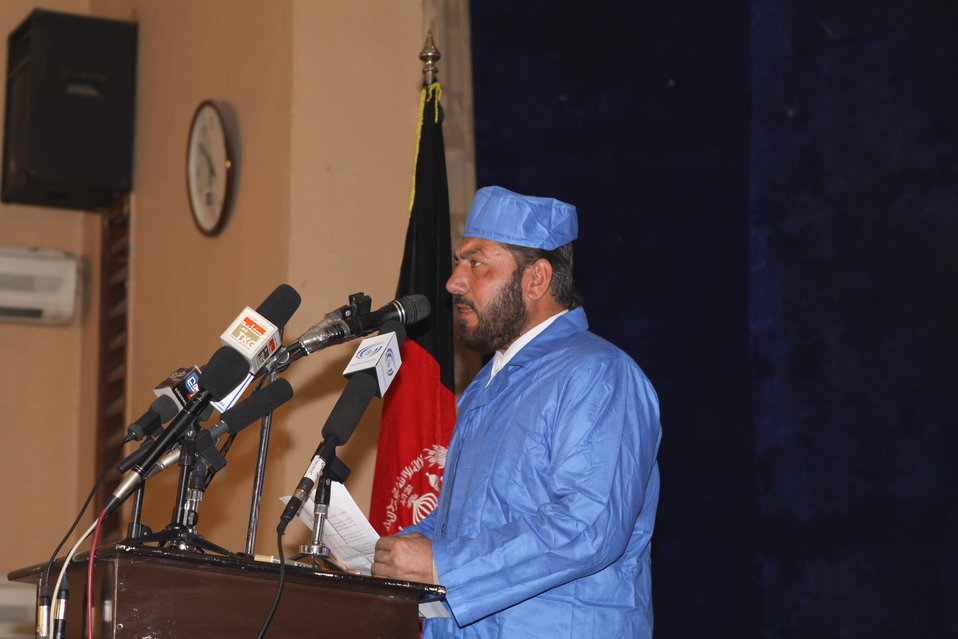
Community Health Workers Celebrated

Kabul, Afghanistan | December 5, 2010 — In support of the United Nations designated International Volunteer Day for Economic and Social Development, Afghanistan’s Ministry of Public Health celebrated its annual Community Health Worker Day today. Acting Minister of Public Health Dr. Suraya Dalil, USAID Senior Deputy Mission Director Robert Hellyer, other government officials, and international donors joined in recognizing the critical contribution of community health workers in Afghanistan and encouraging them to continue their voluntary support to their communities.
The event praised the contributions of the more than 22,000 volunteers throughout the country who deliver community level health-education, counseling, and services out of village health posts located in private homes. The Ministry of Public Health envisioned that community-based healthcare programs will actively encourage communities and families to adopt healthy lifestyles and behaviors, and provide families access to high quality and socially acceptable preventative medicine and life-saving services.
“We have 22,000 community health workers in Afghanistan that are able to implement the basic and standard medicines. They all have been trained through a job description,” said Minister Dalil. Addressing the health workers, she added, “I am proud and feel powerful that I have people like you.”
USAID-funded health projects collaborate closely with the Ministry of Public Health to improve the health and nutritional status of Afghans, provide quality primary healthcare, and promote healthy behaviors at the community and household-levels. USAID supported the training of more than 9,000 of the volunteer community health workers currently working in Afghanistan.
“On behalf of the American people, I congratulate the Community Health Workers for their diligence to gain the skills and knowledge necessary to serve their communities in this important role,” said USAID Senior Deputy Mission Director Hellyer. “USAID strongly supports community based health care and believes that quality community-based health services are essential to reaching Afghanistan’s Millennium Development Goals.”
To support the Basic Package of Health Services, USAID assisted in developing the community health worker training manual, helped train community health worker supervisors and master-trainers, facilitated in-service training, and produced and developed reporting tools, job aids, and education materials.